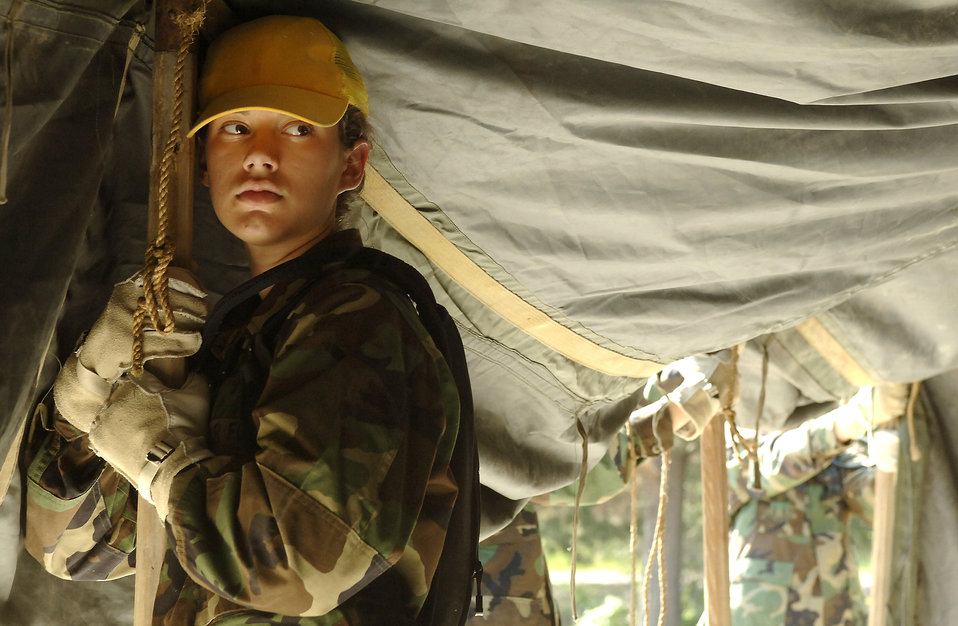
It's only just beginning

An Air Force Academy cadet's first task during the field portion of Basic Cadet Training is to set up his or her tent. Tasks during BCT include M-16 weapons training, confidence and bayonet assault training, drill evaluations, tent inspections and aerobic and physical fitness tests.